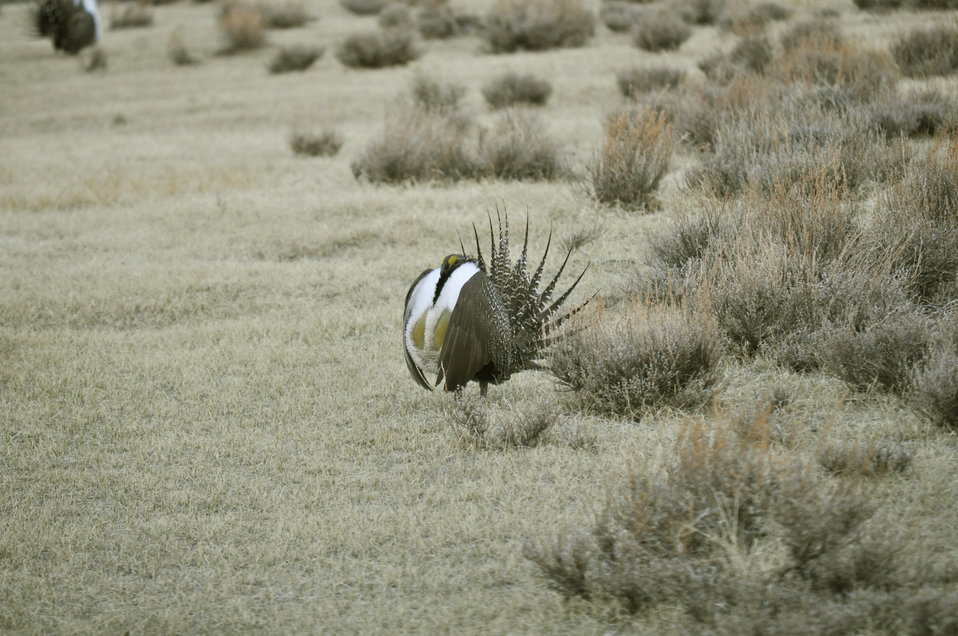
Male greater sage-grouse struts at lek (dancing or mating grounds) to attract females near Bodie, California.